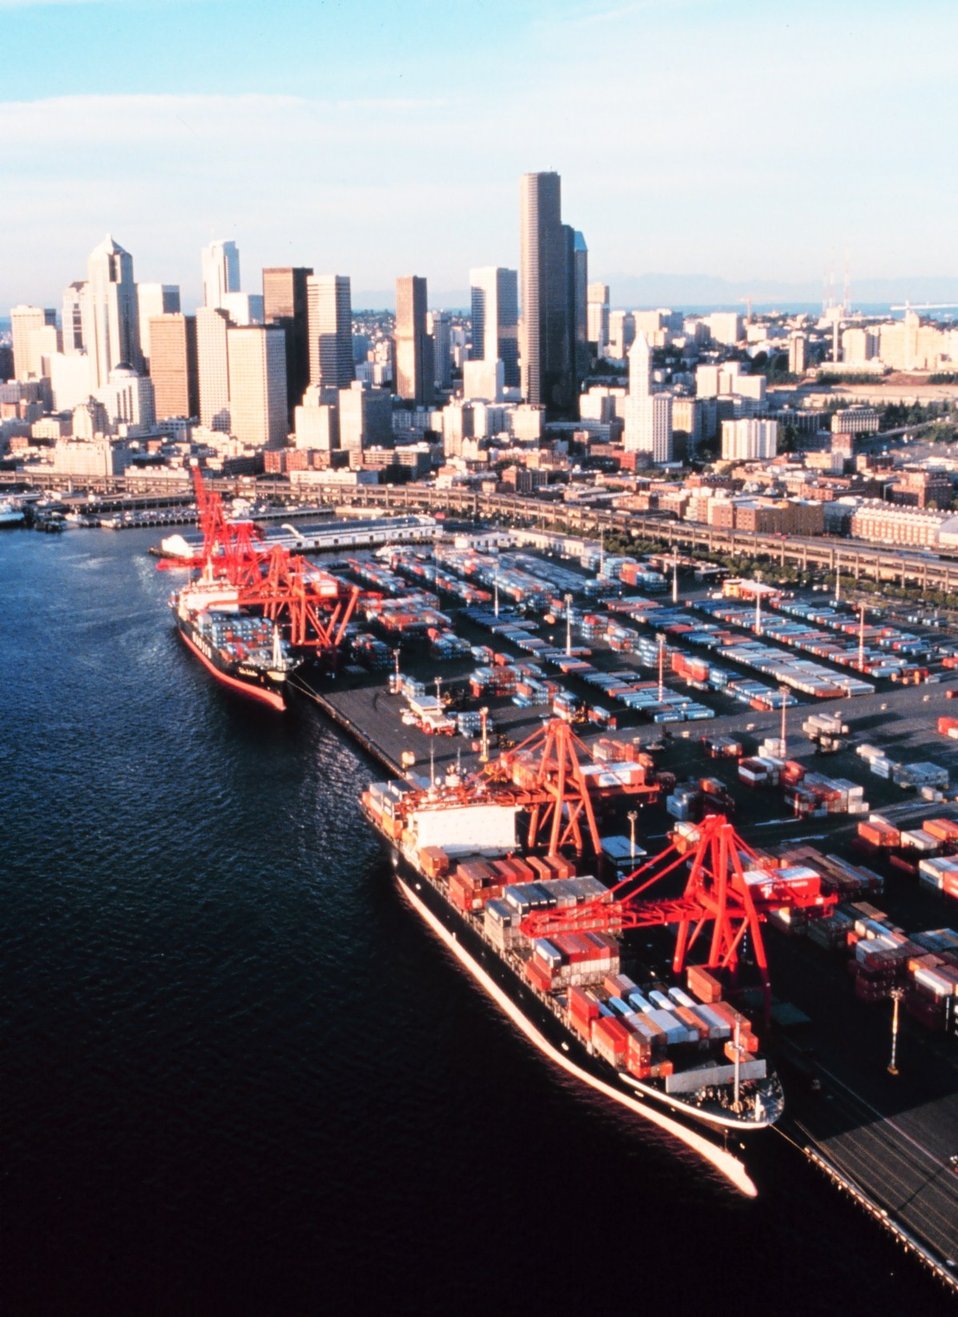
The containership piers at Seattle